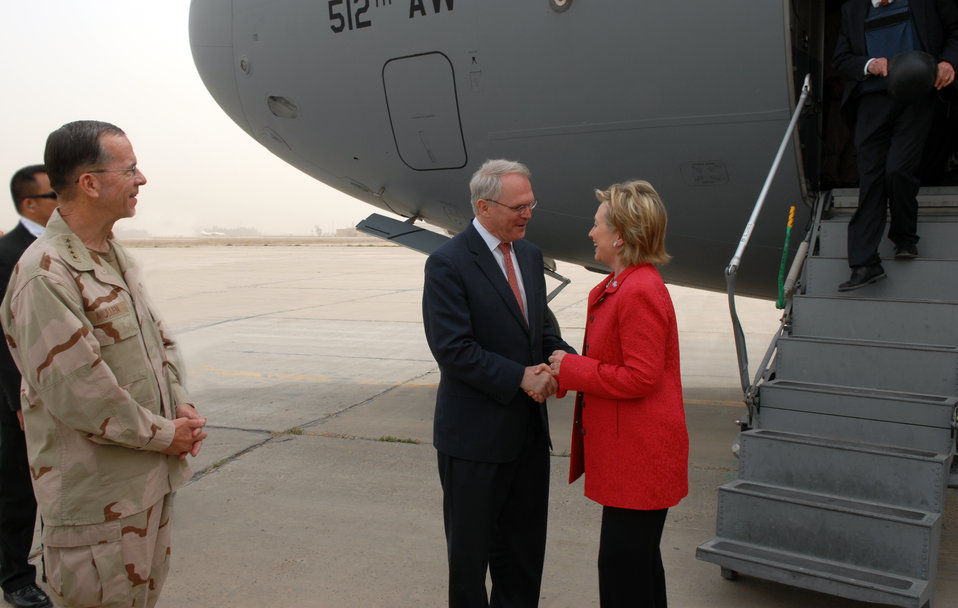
Secretary Clinton Arrives in Baghdad

U.S. Secretary of State Hillary Rodham Clinton arrives in Baghdad, Iraq, greeted by newly arrived U.S. Ambassador to Iraq Christopher R. Hill April 25, 2009. (Admiral Michael Mullen, Chairman of the Joint Chiefs of Staff, looks on (left).